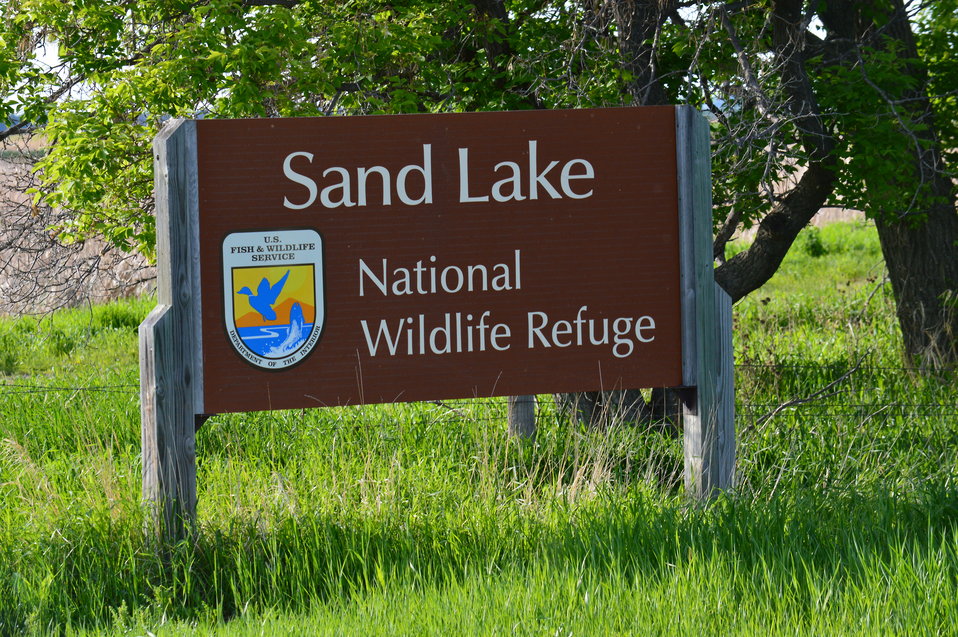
Sand Lake NWR sign

Scenery and wildlife at Sand Lake National Wildlife Refuge in South Dakota